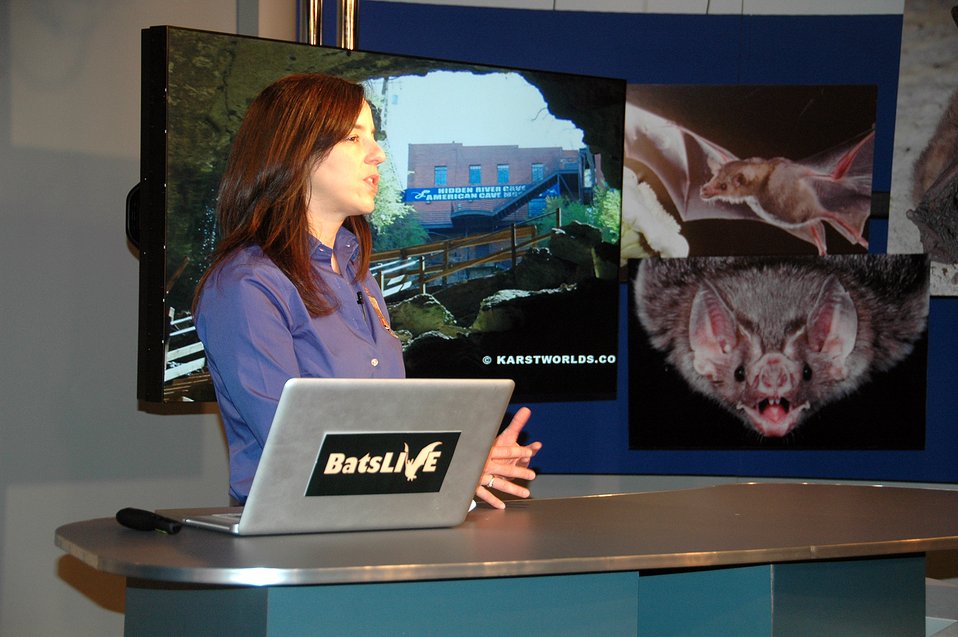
Ann Froschauer talks about threats to bats

Ann Froschauer (USFWS) during the BatsLIVE! Distance Learning Adventure